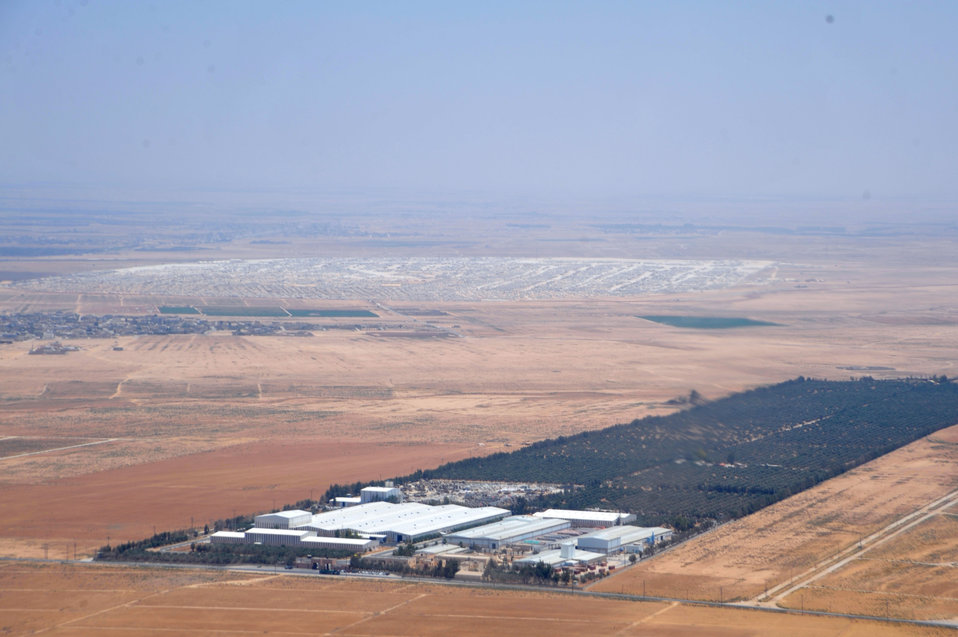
Aerial View of the Za'atri Refugee Camp

The Za'atri camp for Syrian refugees in Jordan is seen on the horizon on July 18, 2013, from a helicopter carrying U.S. Secretary of State John Kerry.